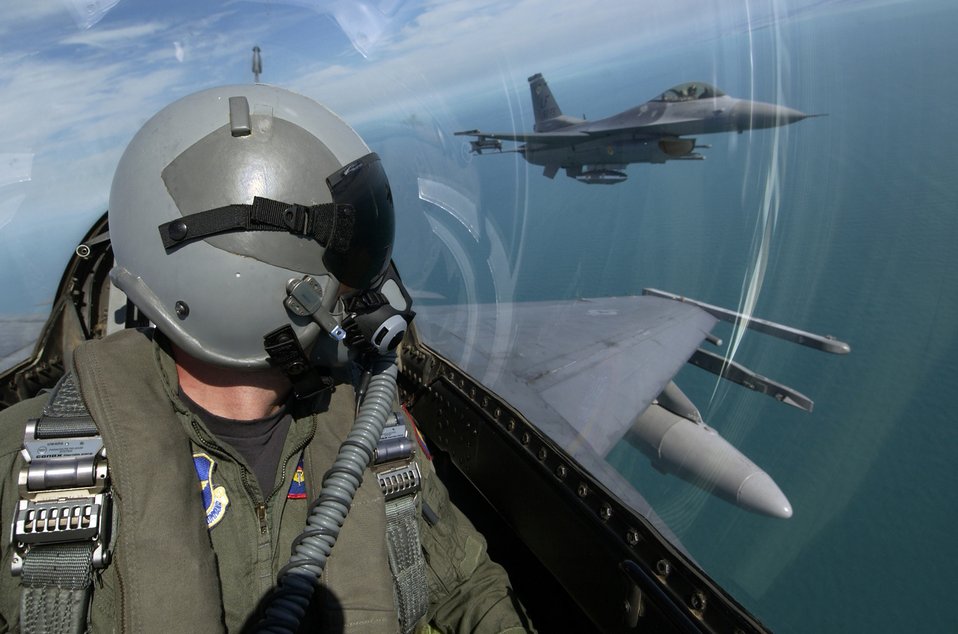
Training with the Navy

OVER FLORIDA - F-16 Fighting Falcons from the 62nd Fighter Squadron, Luke Air Force Base, Ariz., fly over southern Florida during a flight from Luke to Key West, Fla., recently. The 62nd FS deployed to Naval Air Station Key West to fly training missions with Navy F-18 pilots.